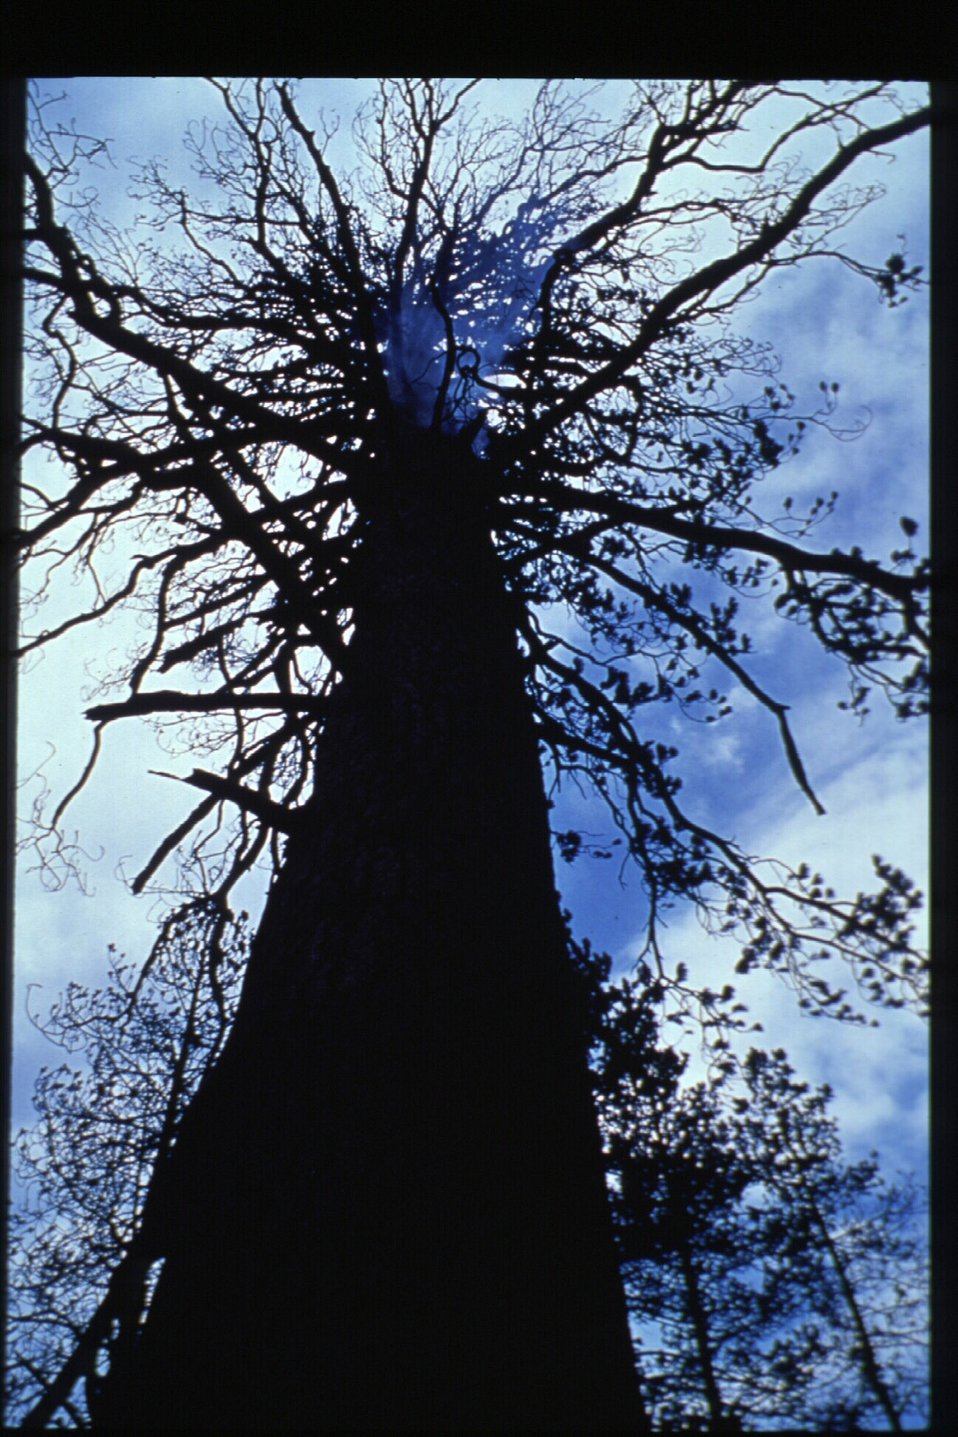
Boise Foothills Fire Danskin Mountains and South Fork of Boise River Burnt tree Four River Field Office LSRD Lower Snake River District